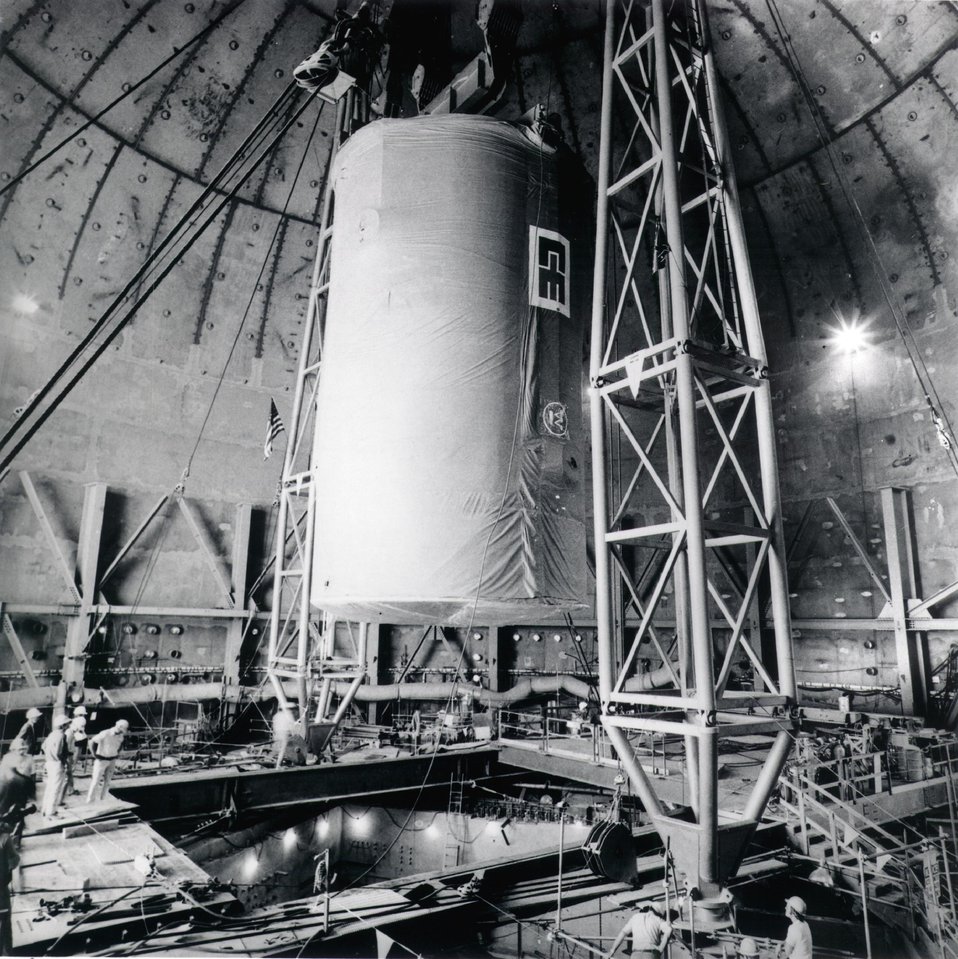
A major milestone in the Fast Flux Test Facility construction program was passed in September 1974 with installation of the 122-ton reactor guard vessel. c. 1974.